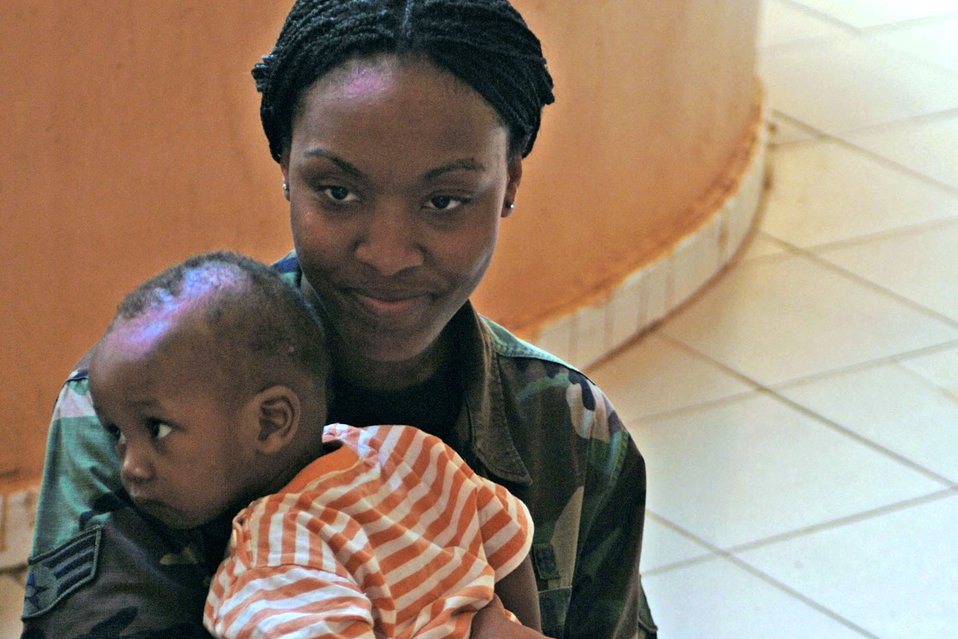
I'm happy here

Senior Airman Latrisha Peebles holds a Malian baby July 16 at an orphanage in Bamako, Mali. Airman Peebles is one of more than 90 servicemembers at MEDFLAG 08, a multi-national medical training exercise for U.S. and African forces.